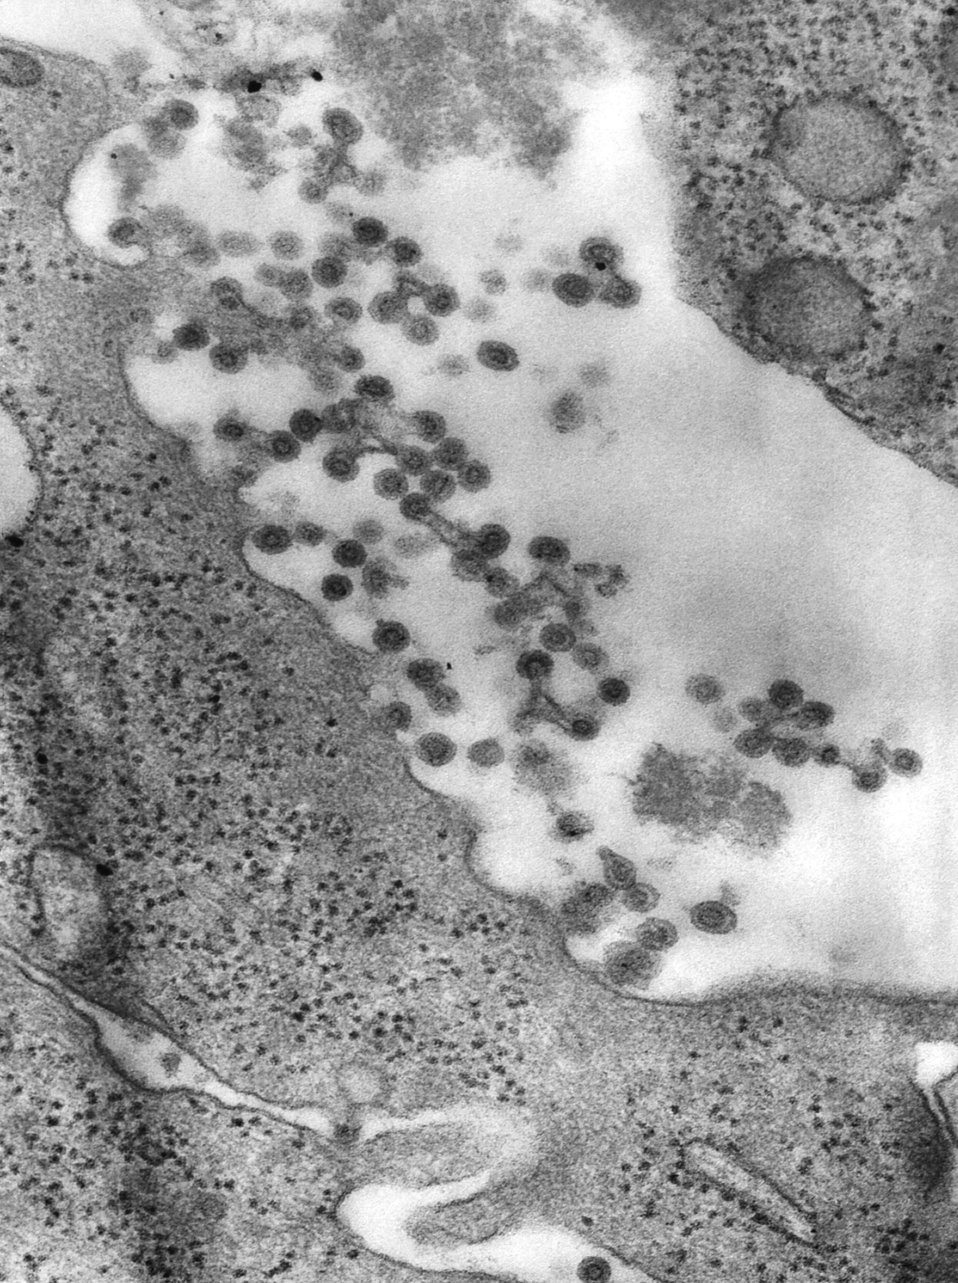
This negatively-stained transmission electron micrograph (TEM) revealed the presence of Rubella virus virions, as they were in the process of budding from the host cell surface to be freed into the host's system, thereby, producing an enveloped virus particle, which means that after budding, the spherical virions' icosahedral capsid is enclosed in the host cell membrane. Inside the capsid lies the Rubella virus' positive-sense single-stranded RNA (( )ssRNA) genome. The Rubella virus is known to be the cause of rubella, otherwise known as German measles.